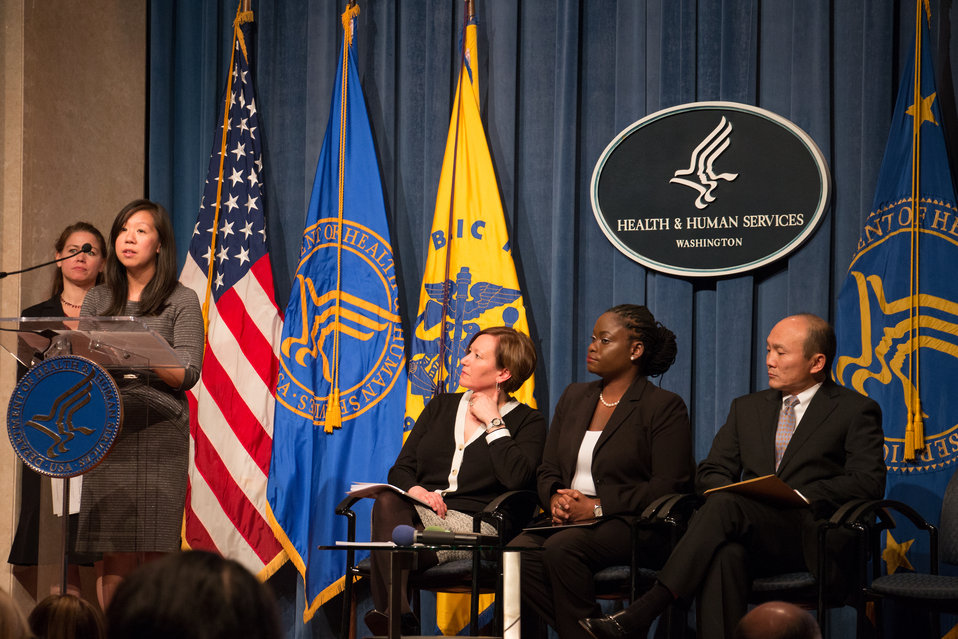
VHAP Launch (292 of 511)